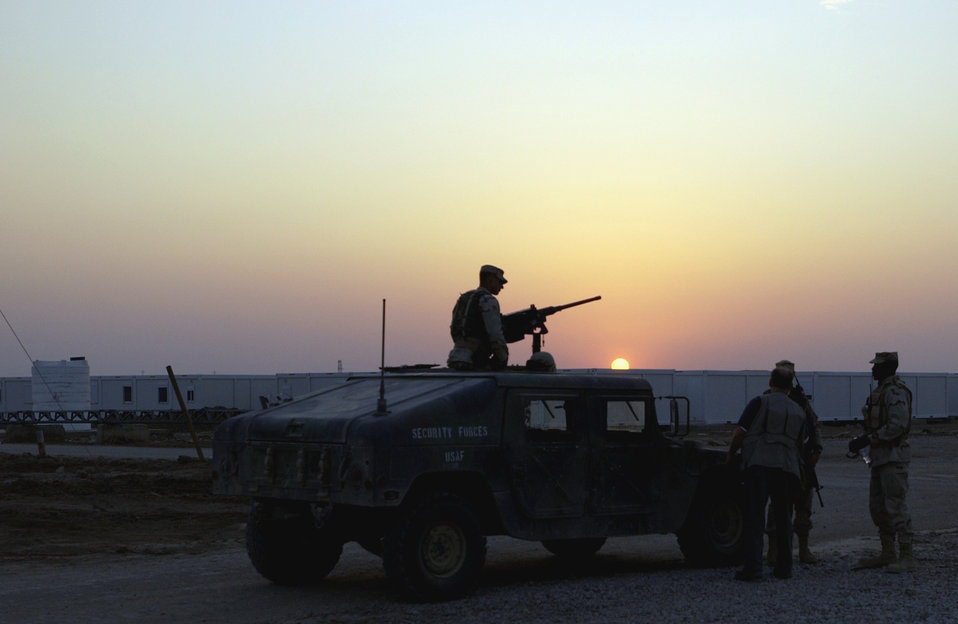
Watching eyes

TALLIL AIR BASE, Iraq -- Senior Airman Blake Walterscheid guards the Italian army compound here April 14. Airman Walterscheid is with the 407th Expeditionary Security Forces Squadron.